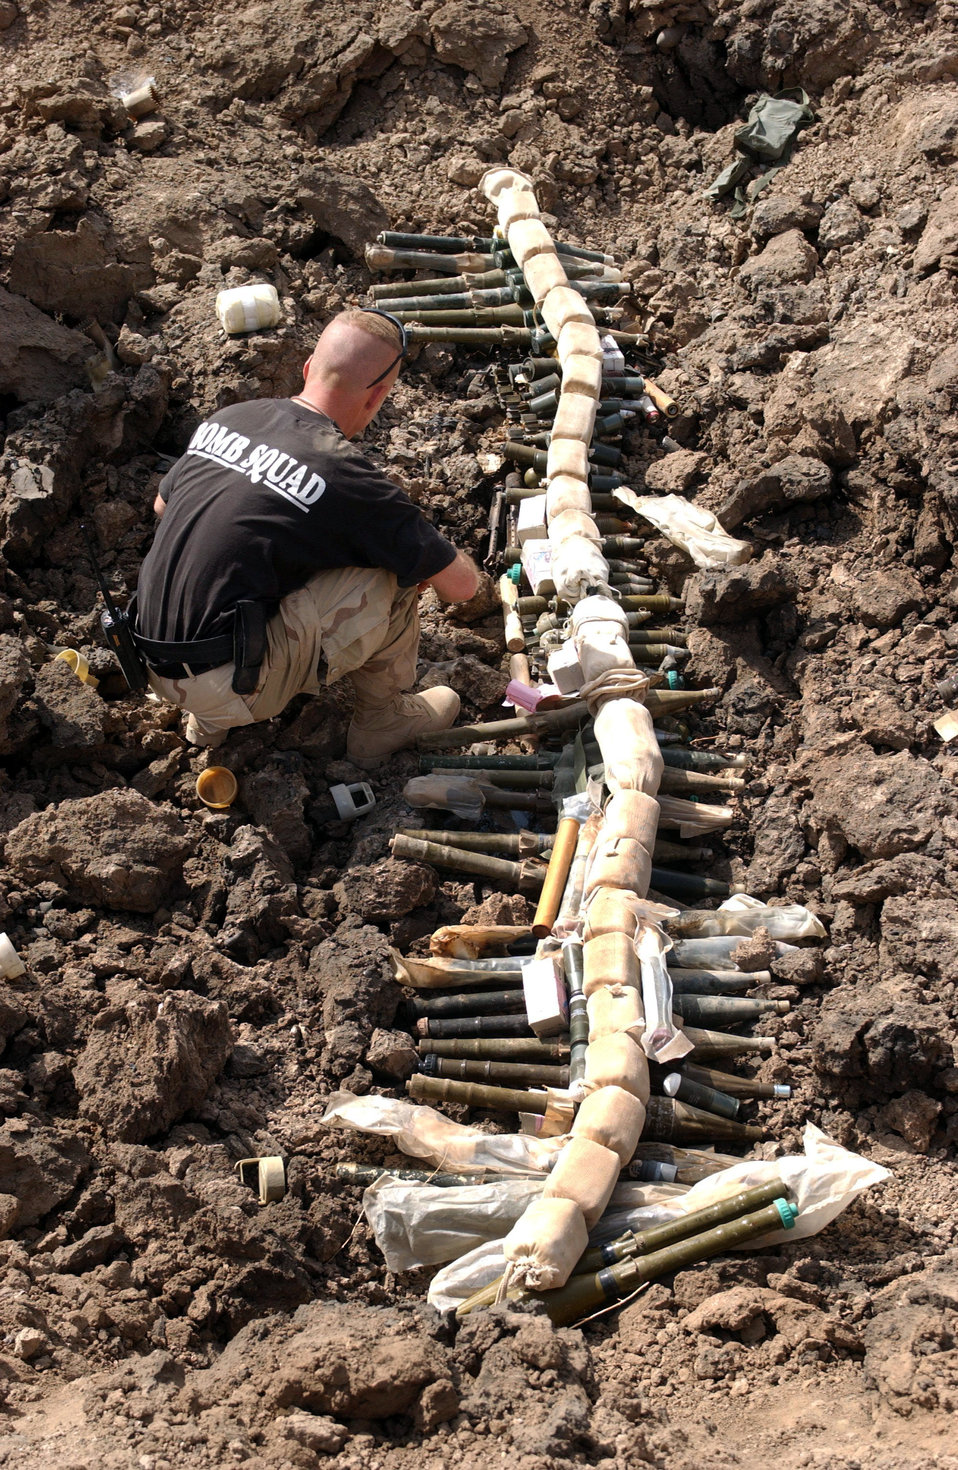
Demolition man

OPERATION IRAQI FREEDOM -- Staff Sgt. Will Kellum, 96th Civil Engineer Squadron, Explosive Ordinance Disposal, Eglin Air Force Base, Fla., prepares to demolish unexploded ordinance at Baghdad International Airport May 7, 2003. The Baghdad airport is a primary base of operations for U.S. troops, cargo and humanitarian airlift for Operation Iraqi Freedom.